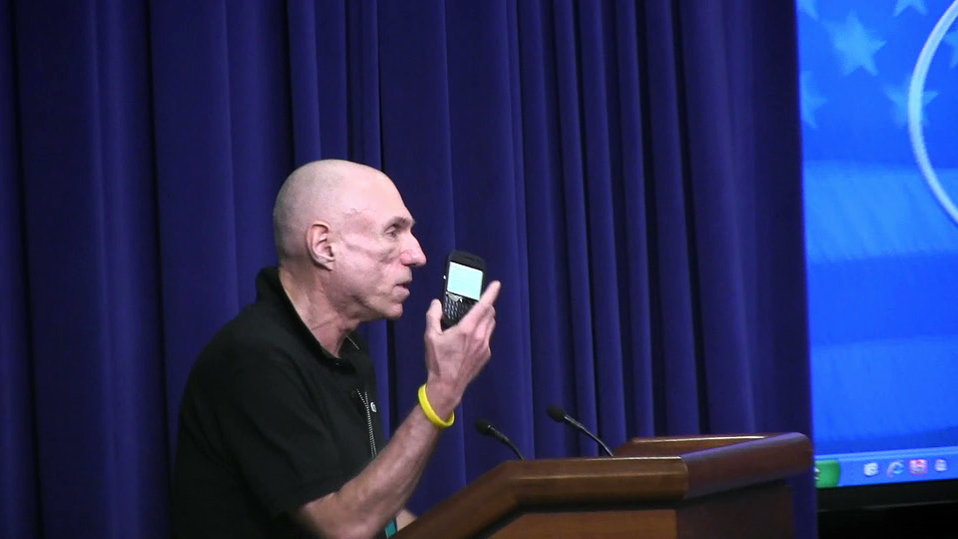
WHDpanel7